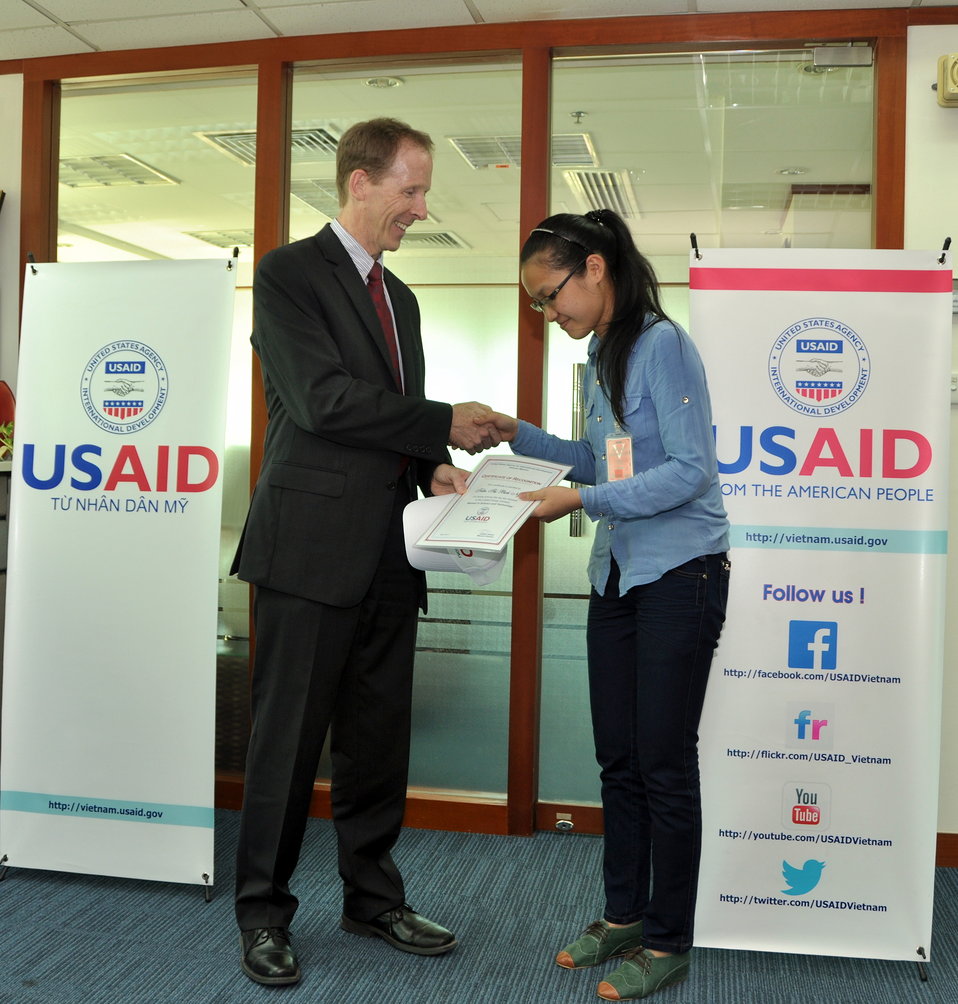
Women in Science and Technology Essay Contest Award Ceremony

USAID Mission Director Joakim Parker awards a certificate of recognition to Ms. Tran Thi Bich Ngoc, a student from Hanoi University of Commerce, who is among top 10 finalists in the USAID Women in Science and Technology Essay contest, on May 16, 2013.